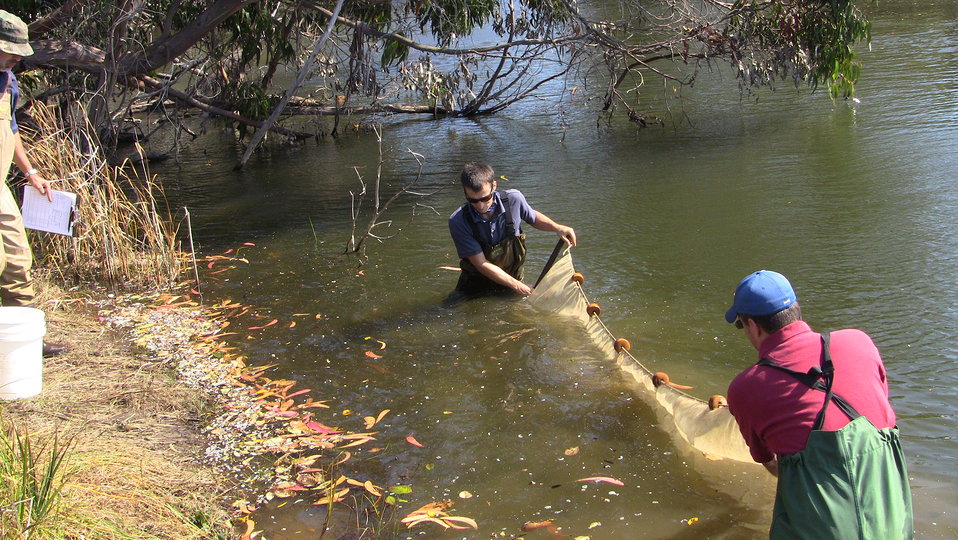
Tidewater Goby Monitoring

Prior to the lagoon breach, the U.S. Fish and Wildlife Service went out to survey for the endangered tidewater goby.